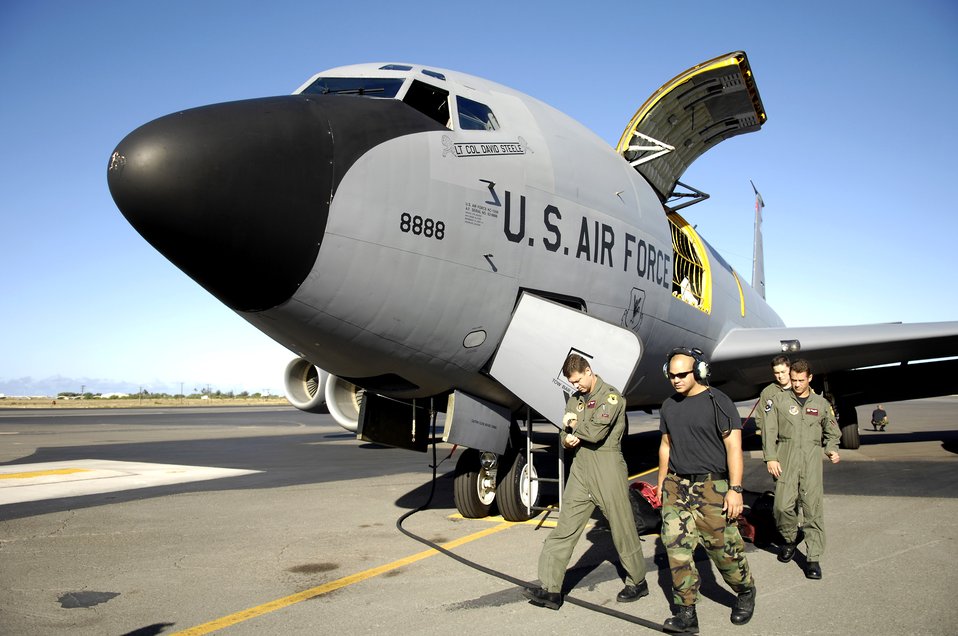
KC-135, C-17 crews rendezvous for refuel readiness

Aircrew and maintenance personnel prepare to launch for a refueling mission June 18 from Hickam Air Force Base, Hawaii. A KC-135 Stratotanker crew from the 18th Wing at Kadena Air Base, Japan is at Hickam AFB practicing with a C-17 Globemaster III from the 535th Airlift Squadron for the Air Mobility Command Rodeo. The Airmen are with the 909th Air Refueling Squadron.